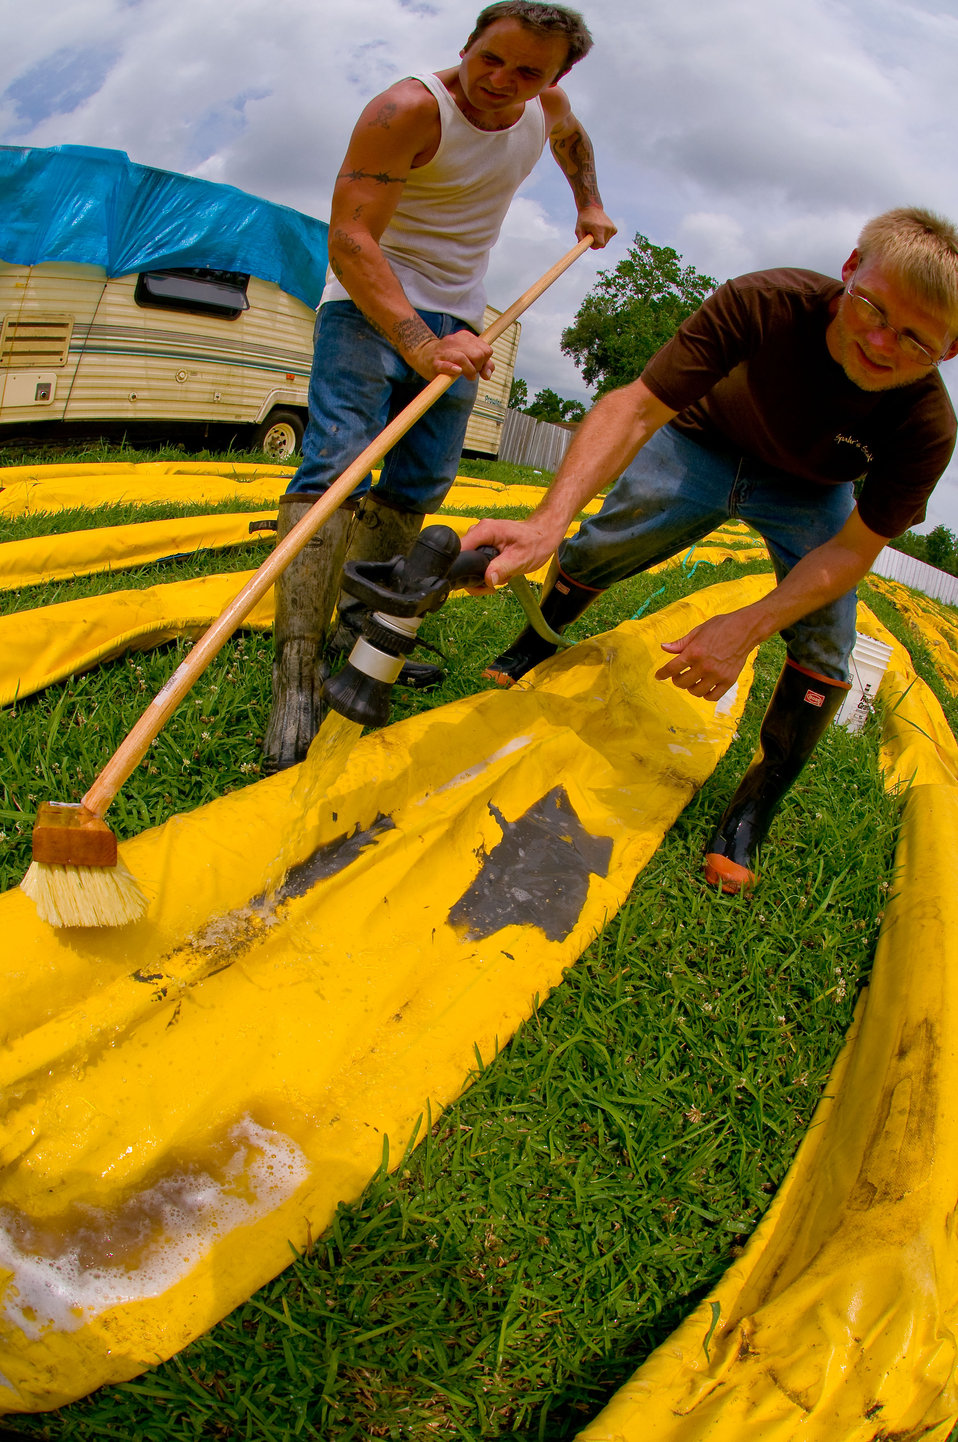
Many used their own boats to help with the BP oil release.

May 13, 2010. Washing mud off of booms in preparation for deployment. Near Houma, La.